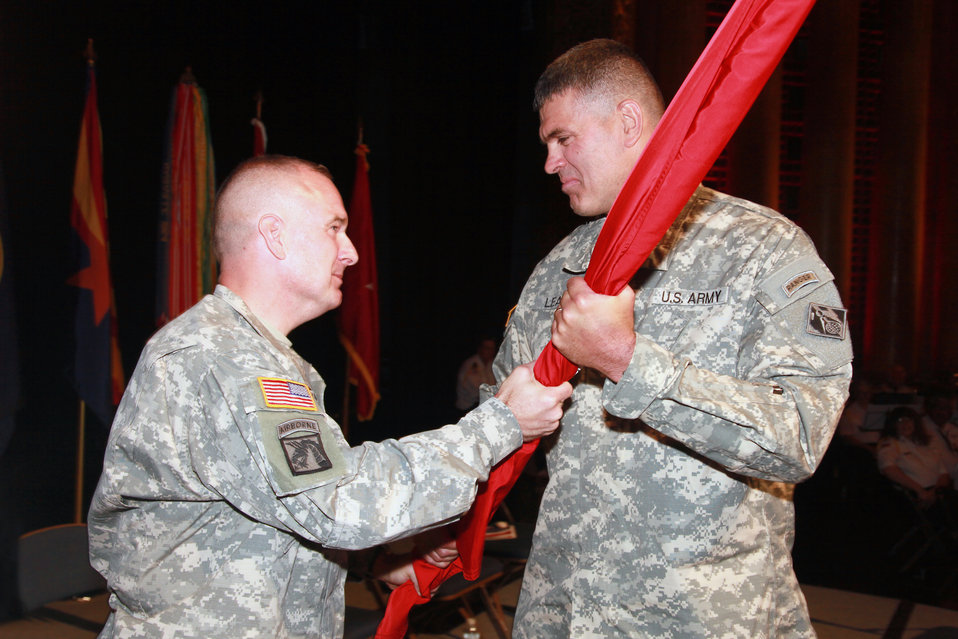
SACRAMENTO,Calif. (July 27,2010)--South Pacific Division Commander BG Donahue passes the command flag for the Sacramento District to it's new commander COL Bill Leady here at the Change of Command ceremony.